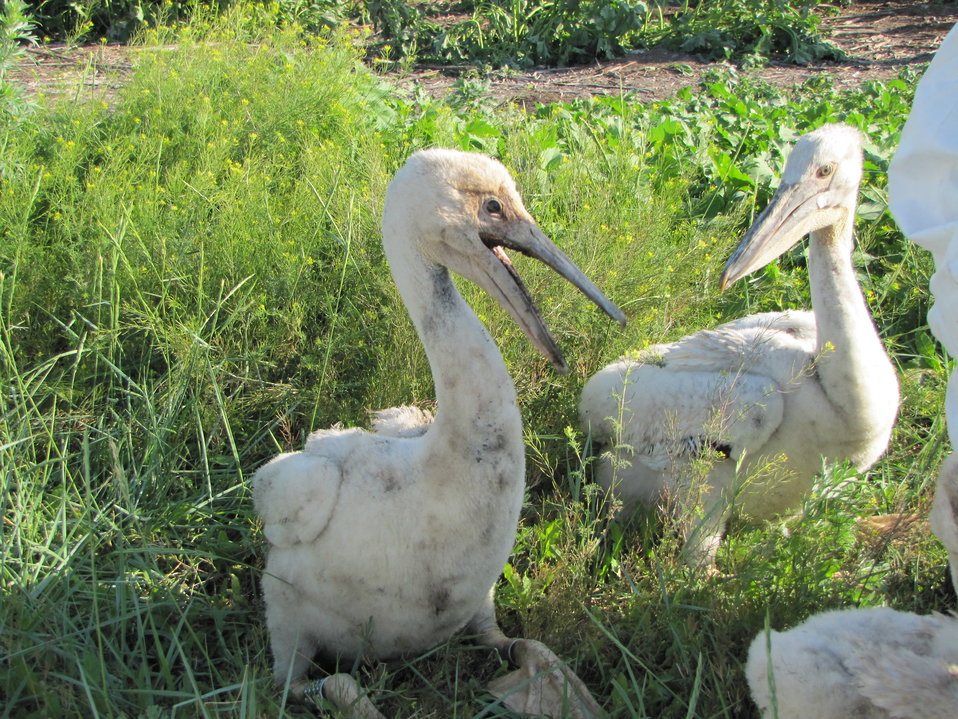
Two young pelicans

Young American White Pelicans on Chase Lake National Wildlife Refuge in North Dakota.